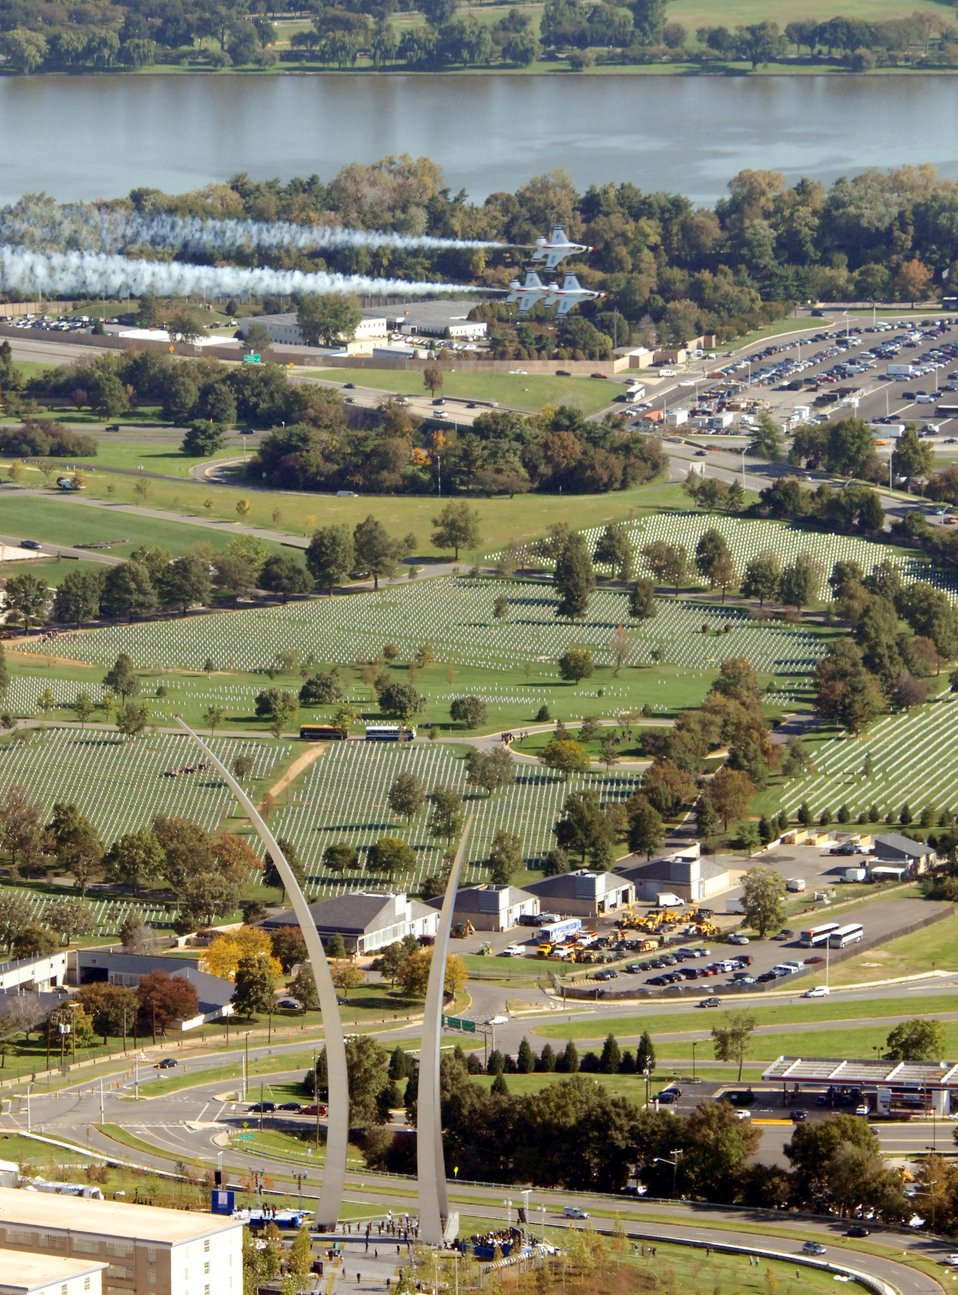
AF Memorial: Warming up for the big show

Members of the U.S. Air Force Thunderbirds aerial demonstration team take a practice run over the Air Force Memorial Oct. 13 in preparation of the memorial dedication ceremony Oct. 14 in Arlington, Va. An Air Force open house will be held near the Pentagon in conjunction with the dedication ceremony that will feature performances by the U.S. Air Force Band, the U.S. Air Force Honor Guard drill team, and a concert by country music performer LeeAnn Womack.